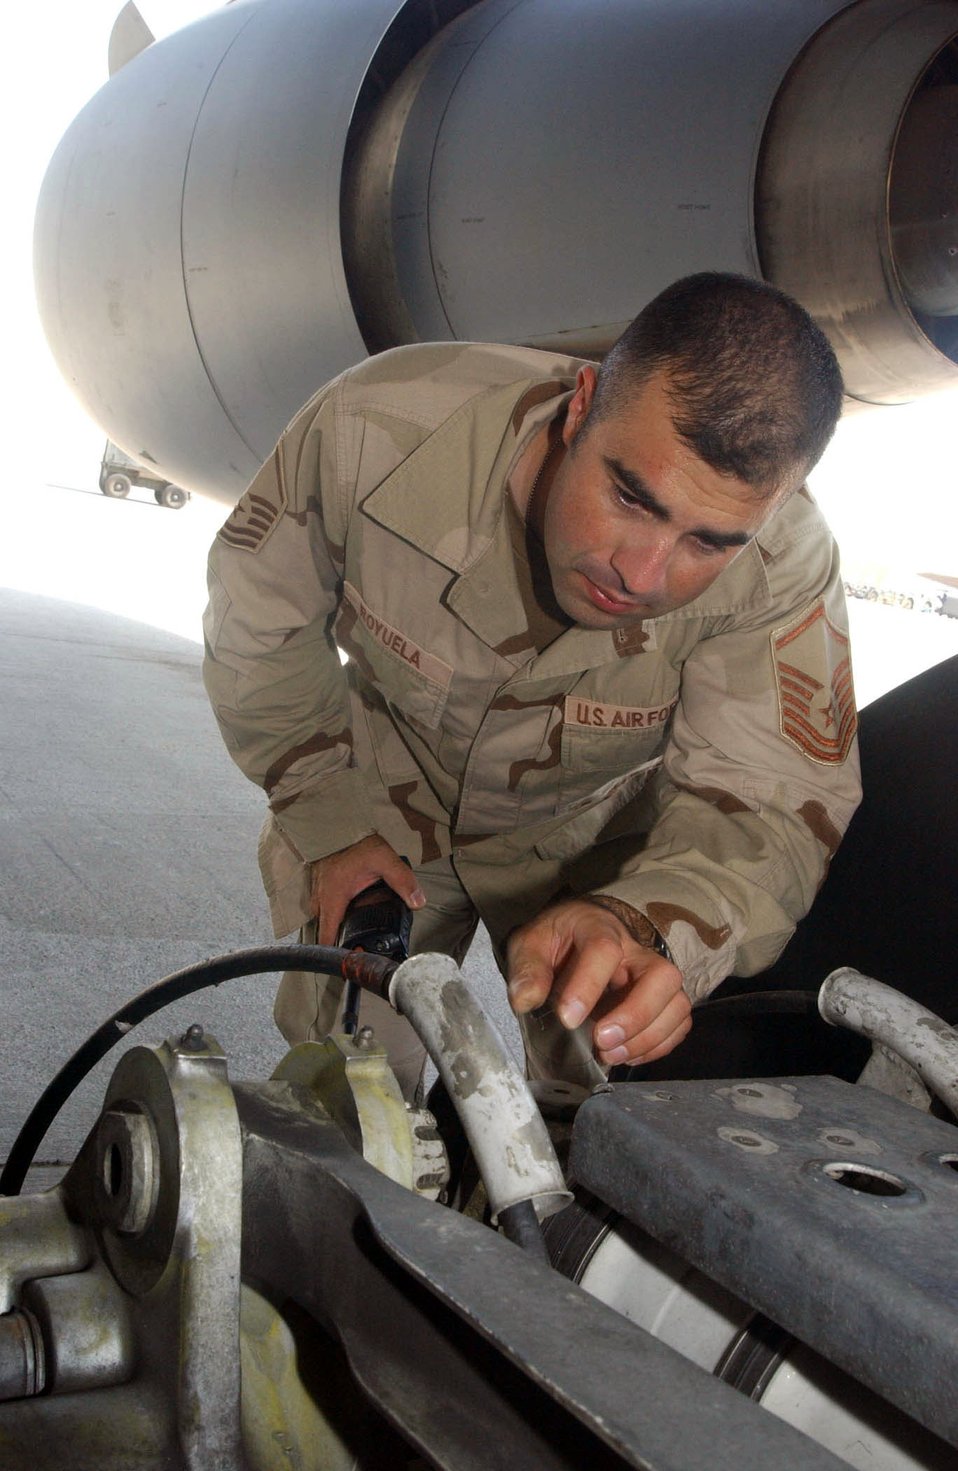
Operation Iraqi Freedom

SOUTHWEST ASIA (AFPN) -- Master Sgt. James Royuela inspects brake lines on the main landing gear of a KC-10A Extender aircraft on the flightline of this desert air base Oct. 26. Sergeant Royuela supervises an aircraft maintenance unit of 21 members devoted to inspecting and maintaining several of the $85 million refueling aircraft used for aerial refueling of coalition aircraft supporting ground forces. He is deployed to a non-disclosable location from the 660th Aircraft Maintenance Squadron based at Travis AFB, Calif.